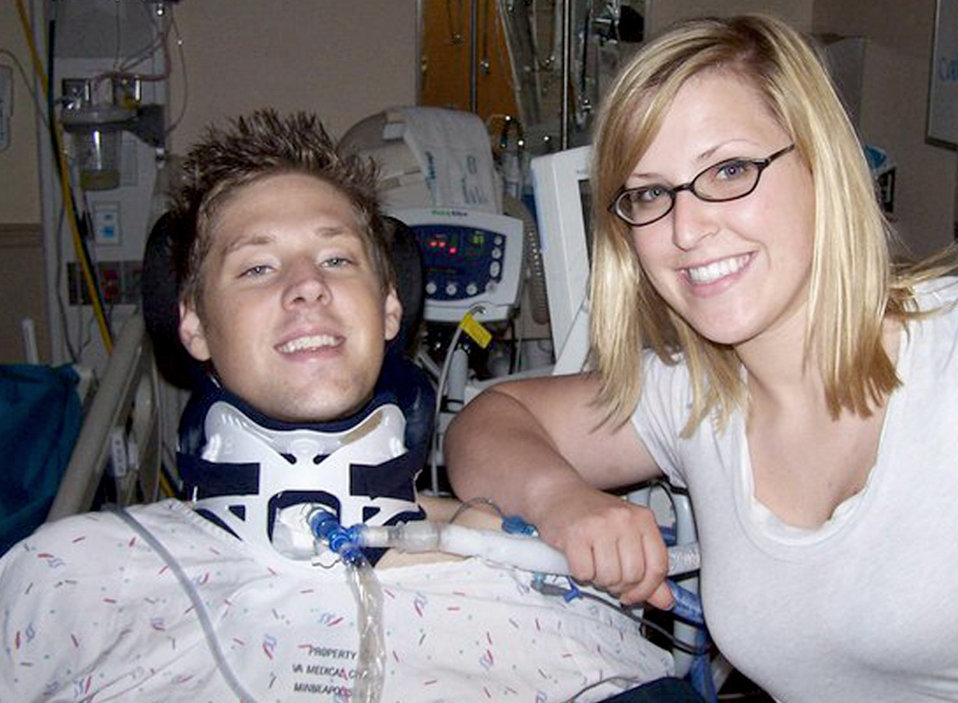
Mission of a different kind

Senior Airman Emerald Ralston sits with Army Sgt. Ian Ralston, her brother, at the Veterans Affairs Spinal Cord Injury Center in Minneapolis, Minn. Airman Ralston is a public affairs specialist with the 92nd Air Refueling Wing Public Affairs.